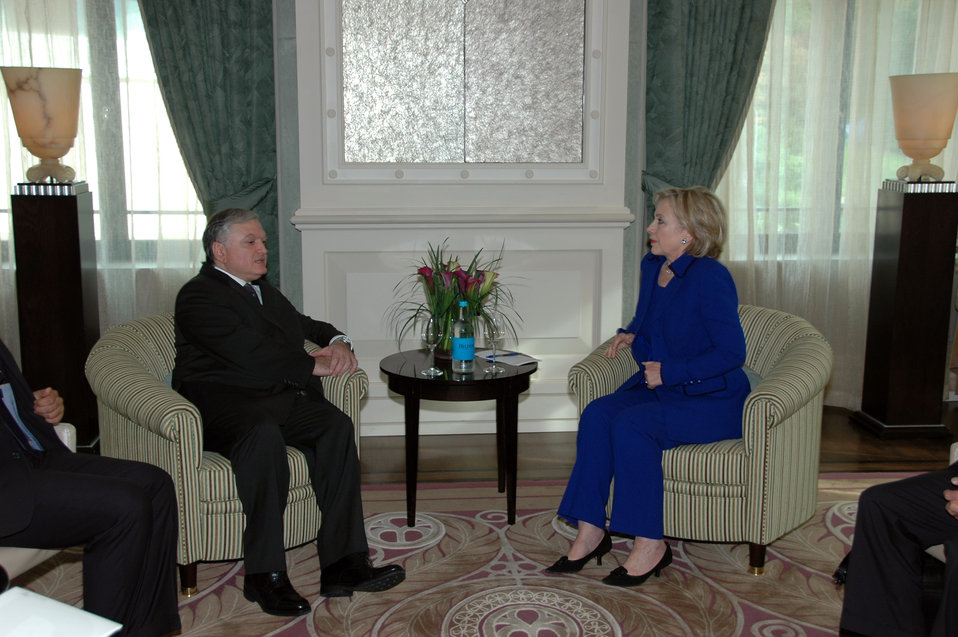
Secretary Clinton Meets With Armenian Foreign Minister

U.S. Secretary of State Hillary Rodham Clinton with Armenian Foreign Minister Edouard Nalbandian in Zurich, Switzerland October 9, 2009.